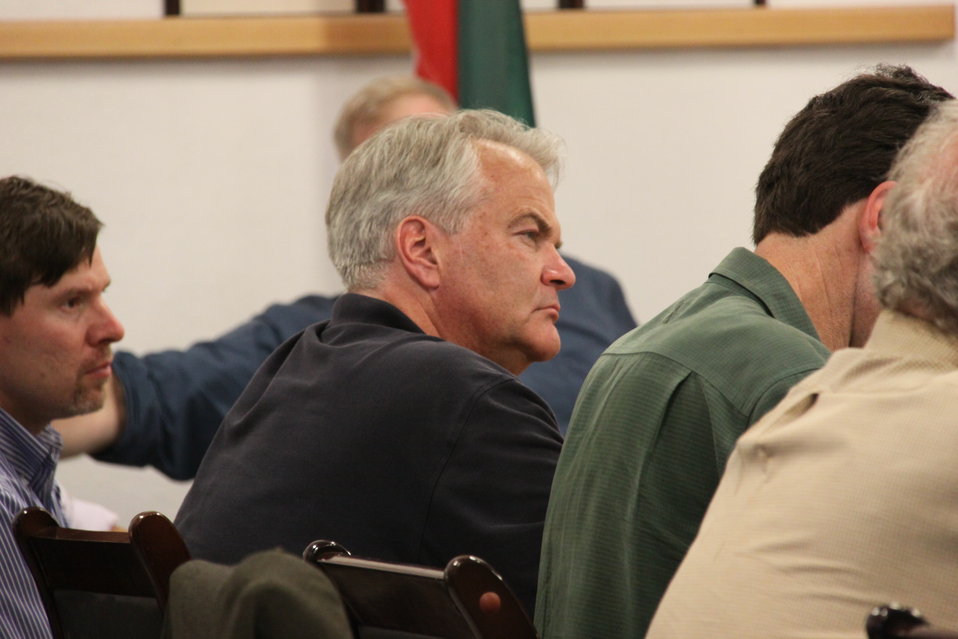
Meeting with Local Leaders in Kandahar